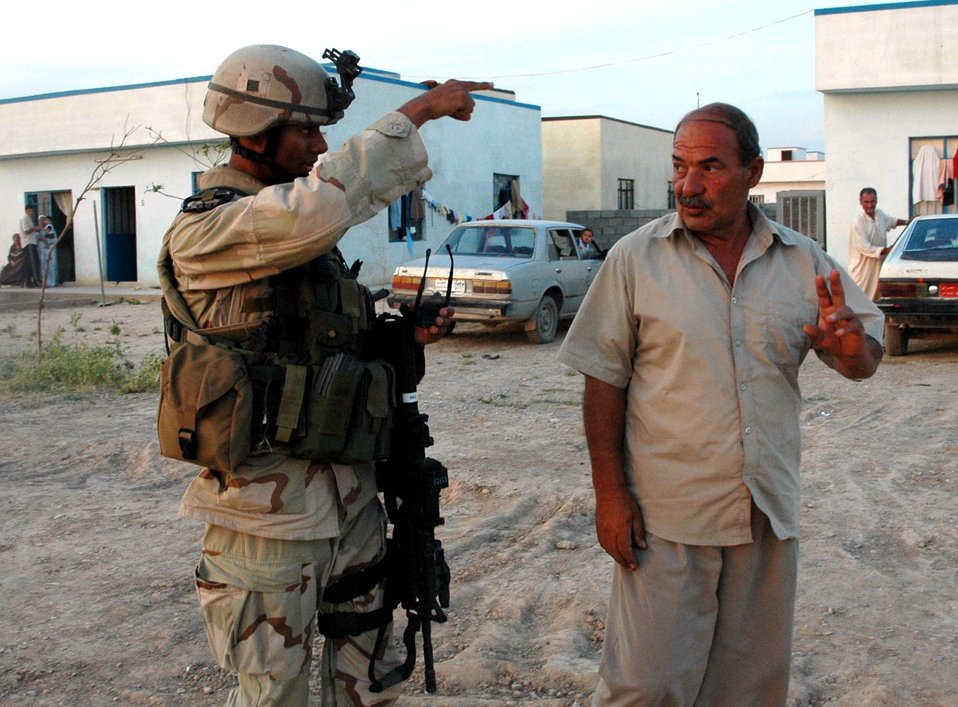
Security forces begin transfer of mission to Iraqis

First Lt. Justin Banez talks with a resident of New Belawah, Iraq, during a patrol on Monday, May 22, 2006. Airmen of the 506th Expeditionary Security Forces Squadron conduct patrols in the base defense zone of Kirkuk. Getting to know the locals helps the Airmen assure freedom of movement for coalition forces.